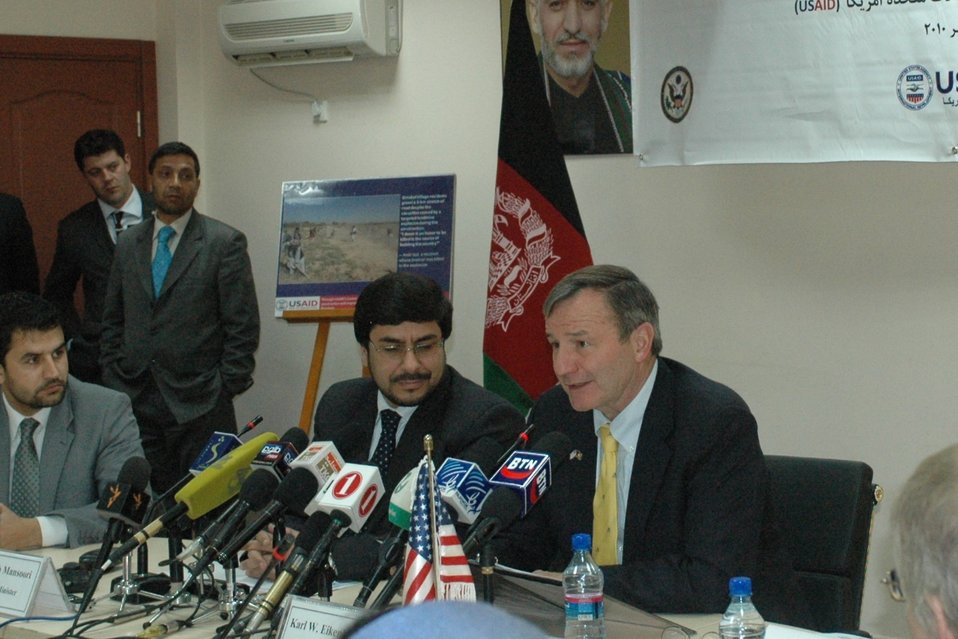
Community Based Stabilization Grants Ceremony, December 7, 2010